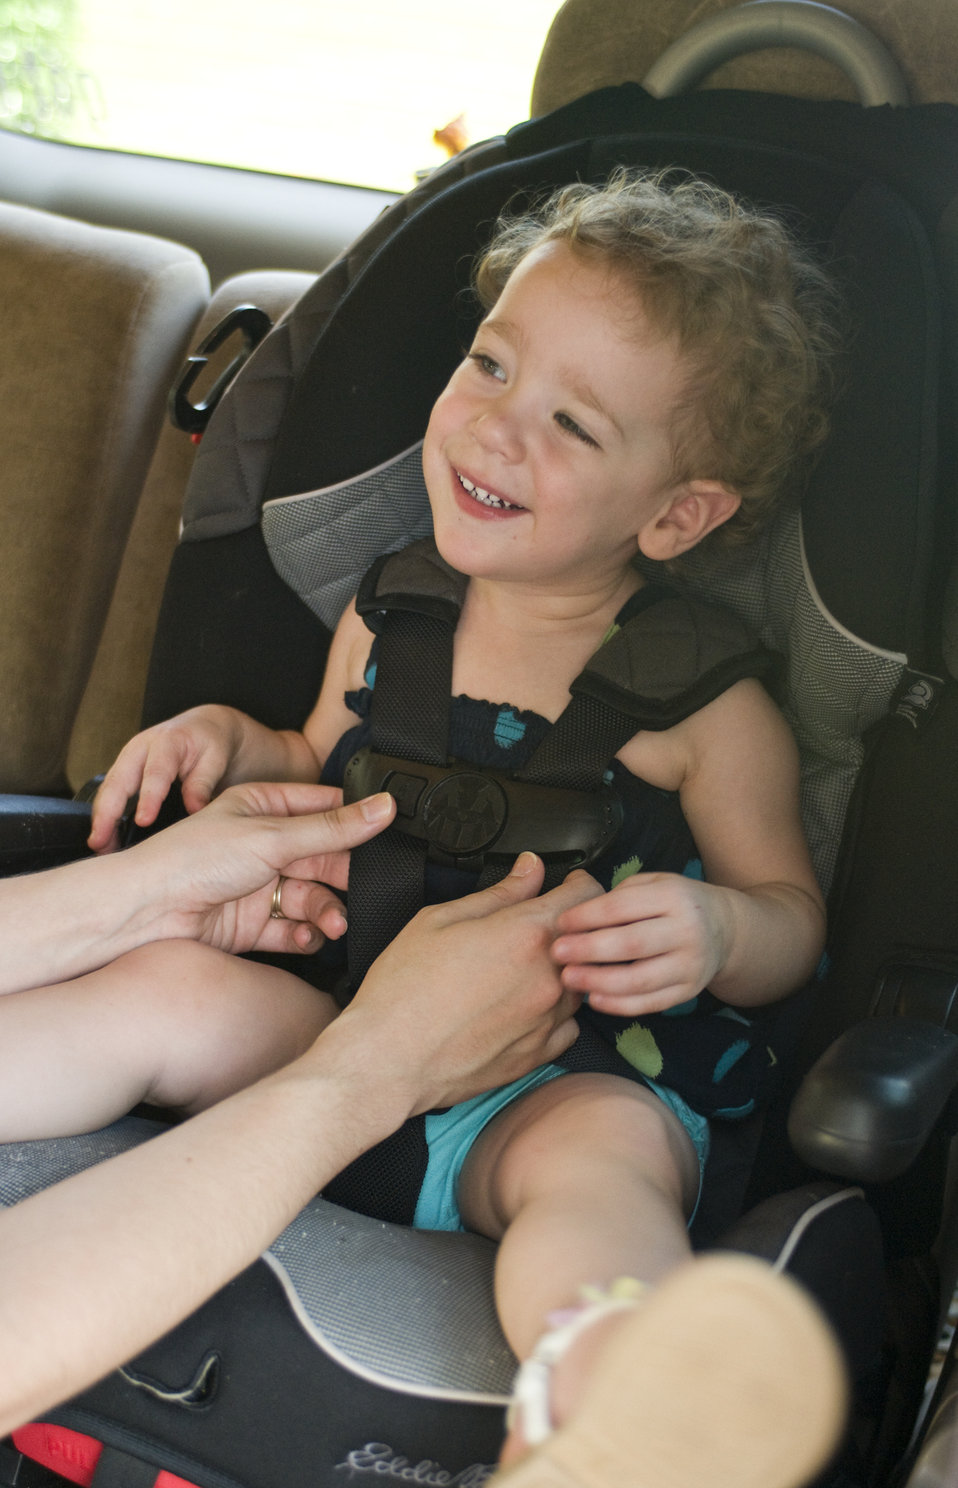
This image depicts a mother in the process of securing her young daughter into her back seat-located child safety seat. At this point of the process, she was adjusting her daughter's fit in the seat, ensuring both her safety and comfort.